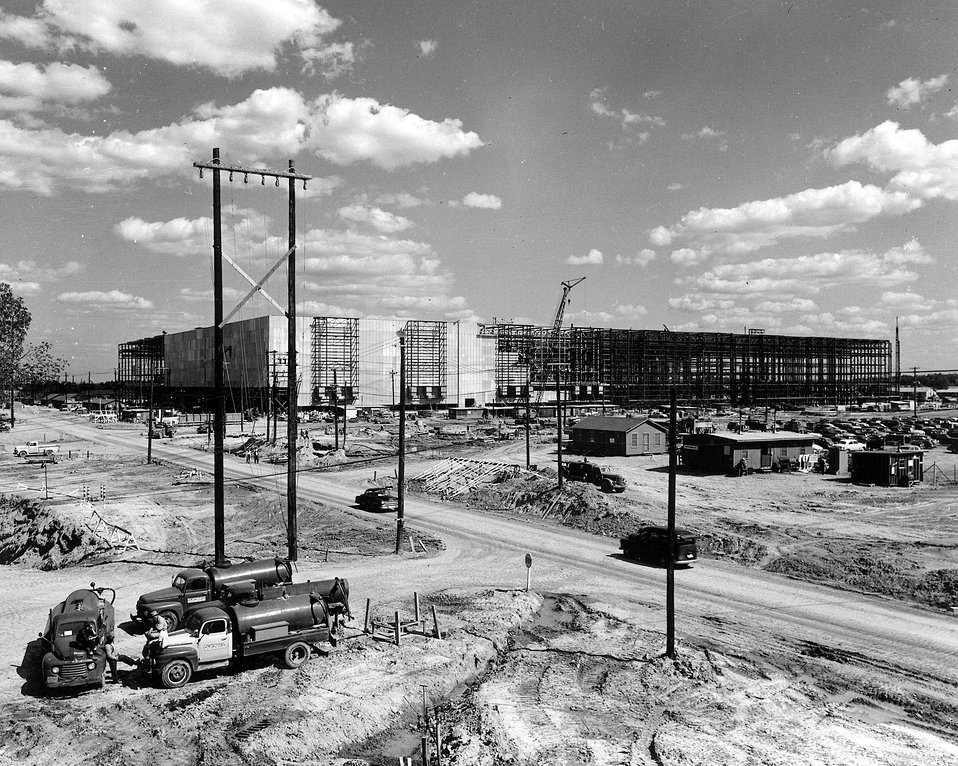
date 5-13-1952.